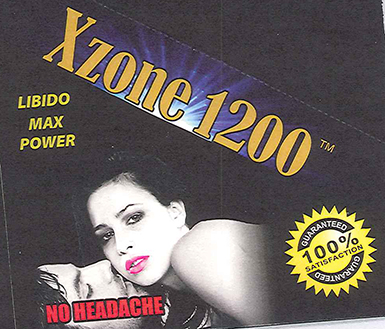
RECALLED – Dietary Supplement

April 1, 2014 – Product Recall – Nova Products, Inc. Issues Voluntary Nationwide Recall of Dietary Supplements with Undeclared Active Pharmaceutical Ingredients.